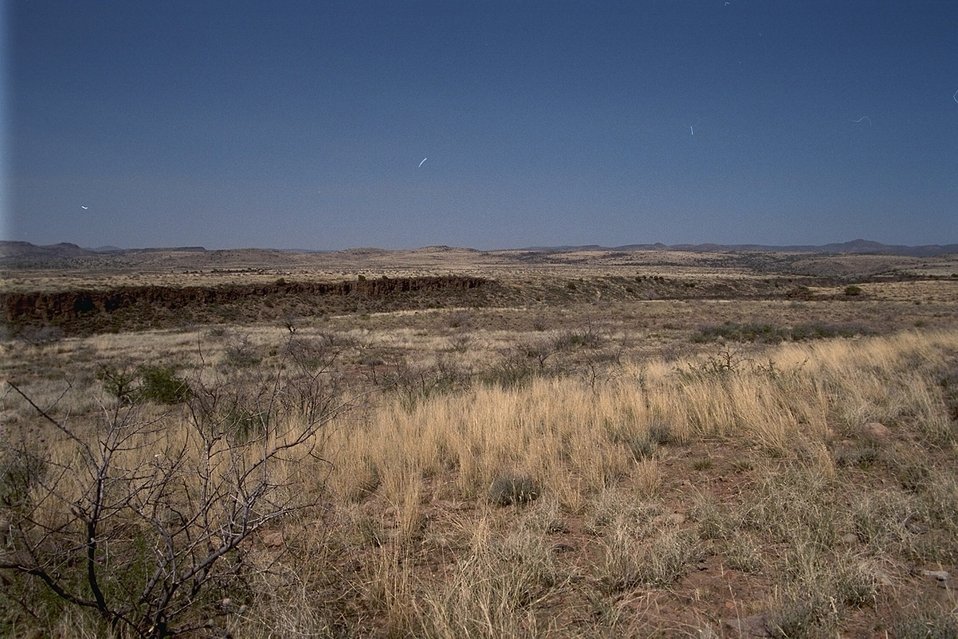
A photograph of a flat plain in the Agua Fria National Monument.